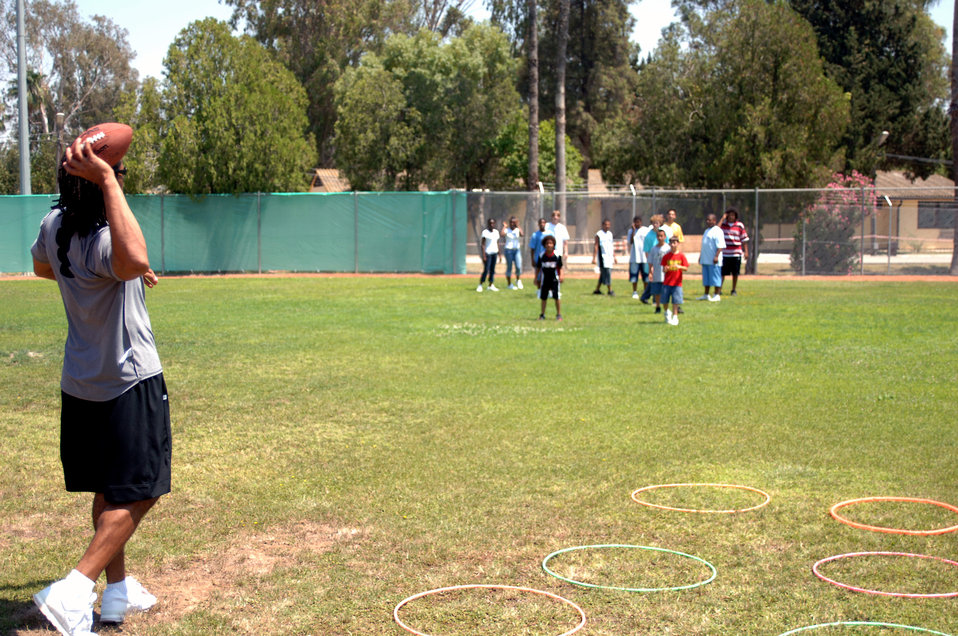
Arizona Cardinal visits Incirlik

Arizona Cardinals wide receiver Larry Fitzgerald conducts passing drills with children at Incirlik Air Base, Turkey, on Wednesday, June 21.